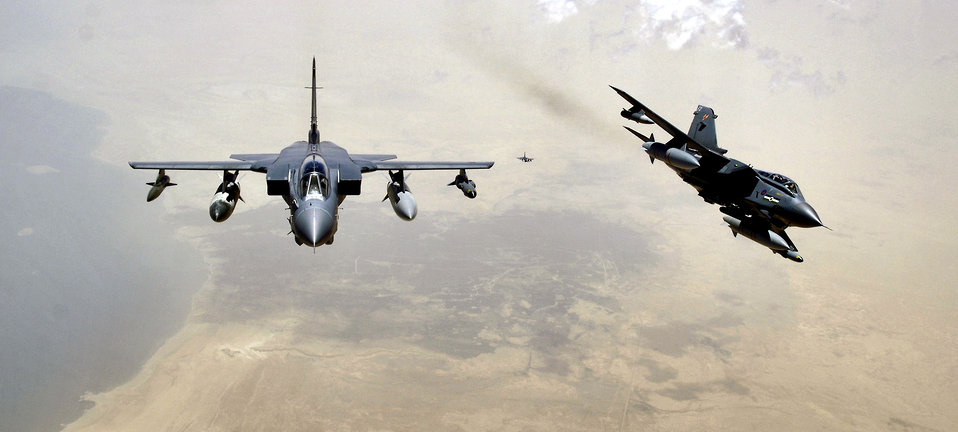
Tornado power

Two RAF Tornado GR-4s pull away from a KC-135 Stratotanker after refueling on Sunday, May 14, 2006. The Tornados and crews are from the 617th Squadron at RAF Lossiemouth, Scotland. The KC-135 and crew are deployed to the 340th Expeditionary Air Refueling Squadron from the 905th Air Refueling Squadron at Grand Forks Air Force Base, N.D.